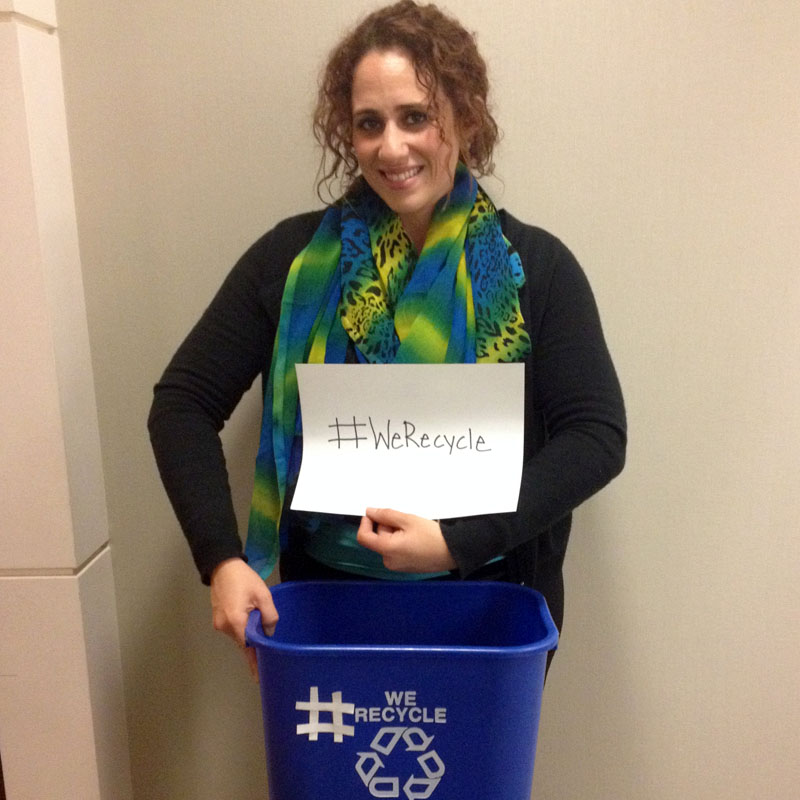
EPA Employee Shereen Recycles

At EPA, #WeRecycle. Learn how you can too: www2.epa.gov/recycle